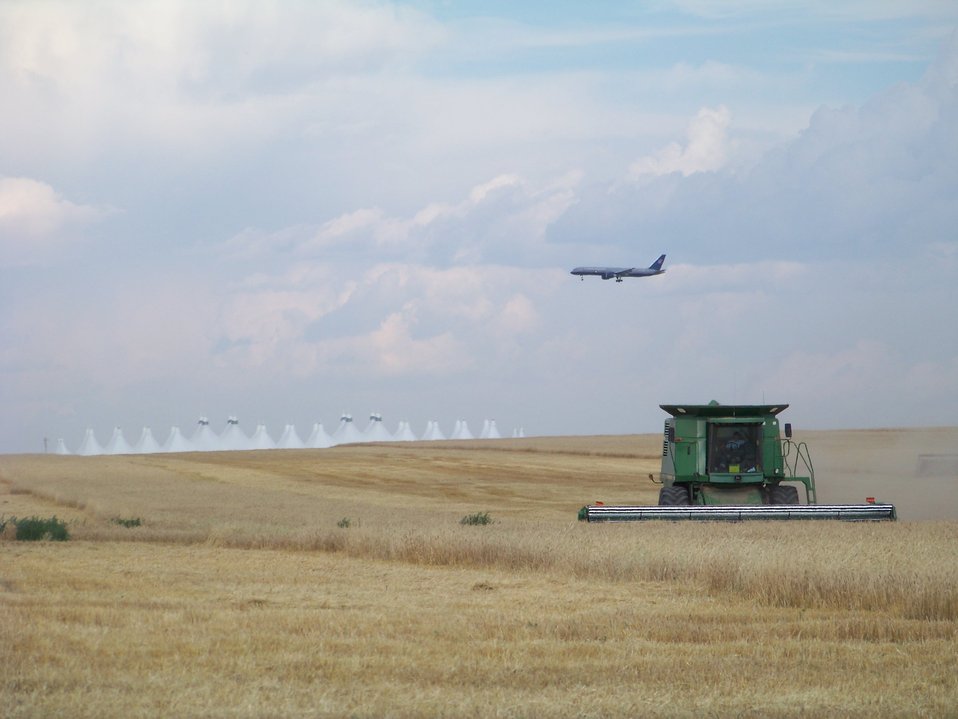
Productive land use near airports is limited and keeping the land fallow is usually the norm. U. S. Department of Agriculture research is exploring alternative uses for lands on and near airports (i.e., solar, wind, biofuels) with the goal of reducing wildlife hazards while also providing a source of revenue for airports.